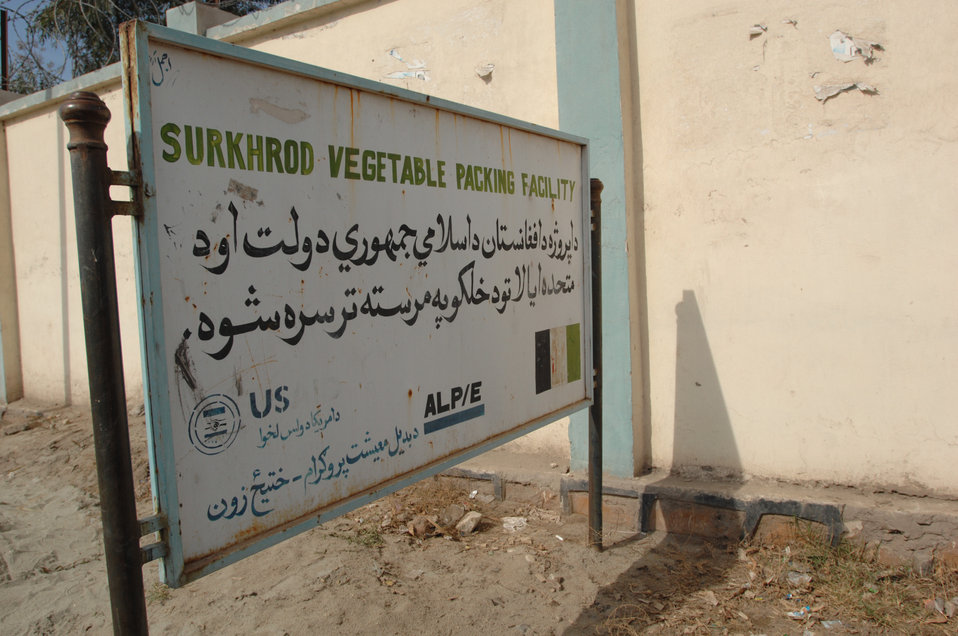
110209sv Shah160

The Surkh Rod vegetable packing facility in Surkh Rod, Nangarhar Province, on Wednesday, February 9, 2011. (S.K. Vemmer/Department of State)